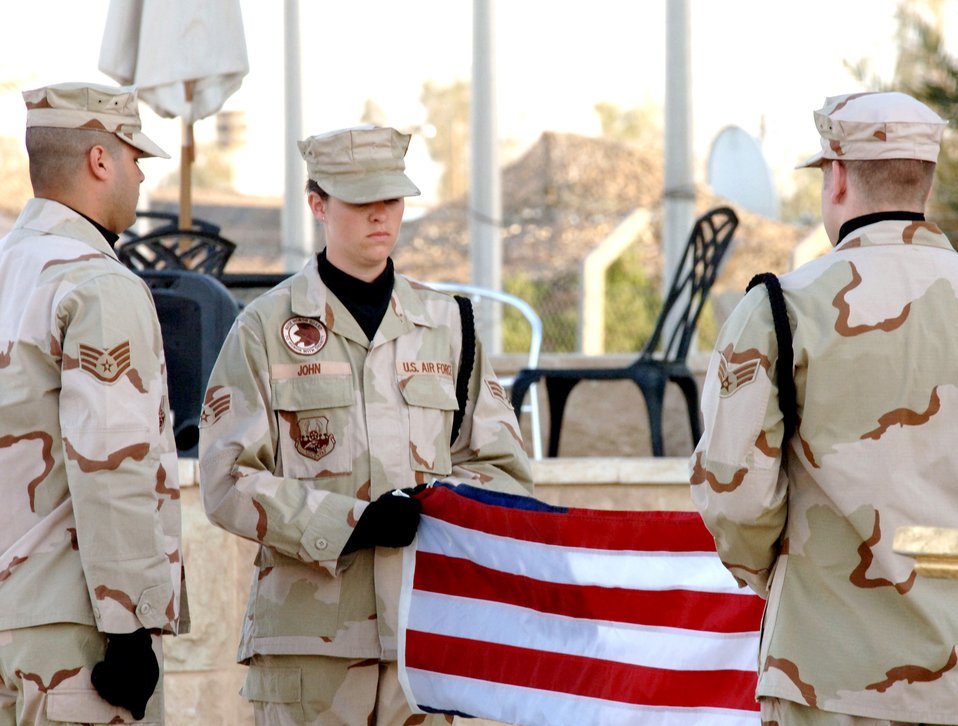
Memorial salute

An honor guard from the 447th Air Expeditionary Group folds the flag during the Memorial Day retreat ceremony at Sather Air Base, Iraq, on Monday, May 29, 2006. From left are Staff Sgt. Jimmy Roman and Senior Airmen Peyton John and Dennis Maser. The 447th AEG operates the primary aerial port for transient military aircraft entering and exiting Iraq. The base is named in honor of Staff Sgt. Scott Sather, a Clio, Mich., native who was killed in combat in Iraq on April 8, 2003.